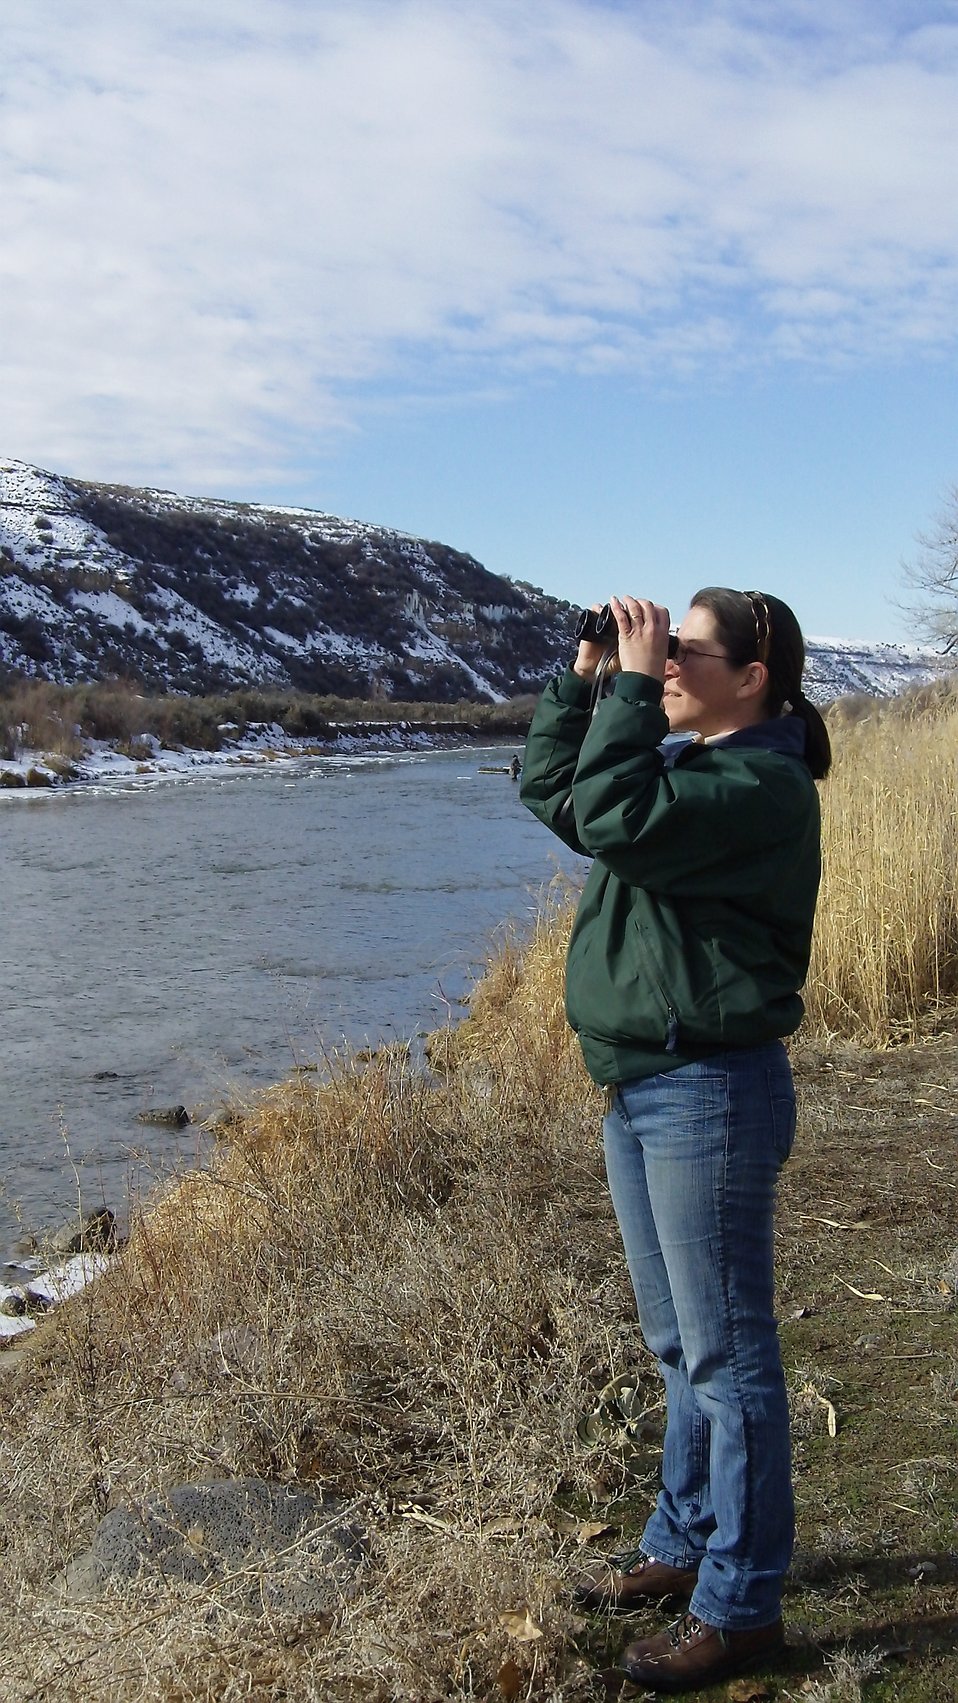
Bird Watching

The hatchery attracts many birds and birders, in fact they do an annual bird count on the Hotchkiss National Wildlife Refuge.